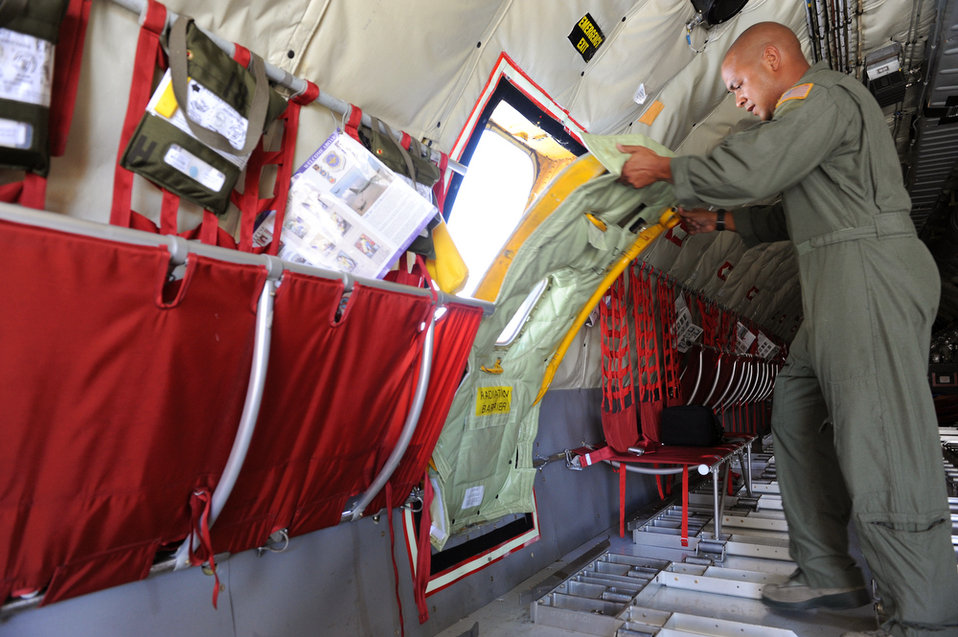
Refuelers keep aircraft flying during exercise

Staff Sgt. Ron Davis, a KC-135 Stratotanker boom operator with the 507th Air Refueling Wing at Tinker Air Force Base, Okla., closes the door of the tanker July 20, 2010, before departing Joint Base Pearl Harbor-Hickam, Hawaii, to refuel aircraft participating in the Rim of the Pacific exercise. RIMPAC, the world's largest maritime exercise, is a biennial event which stresses interoperability among the 14 nations participating in the exercise.